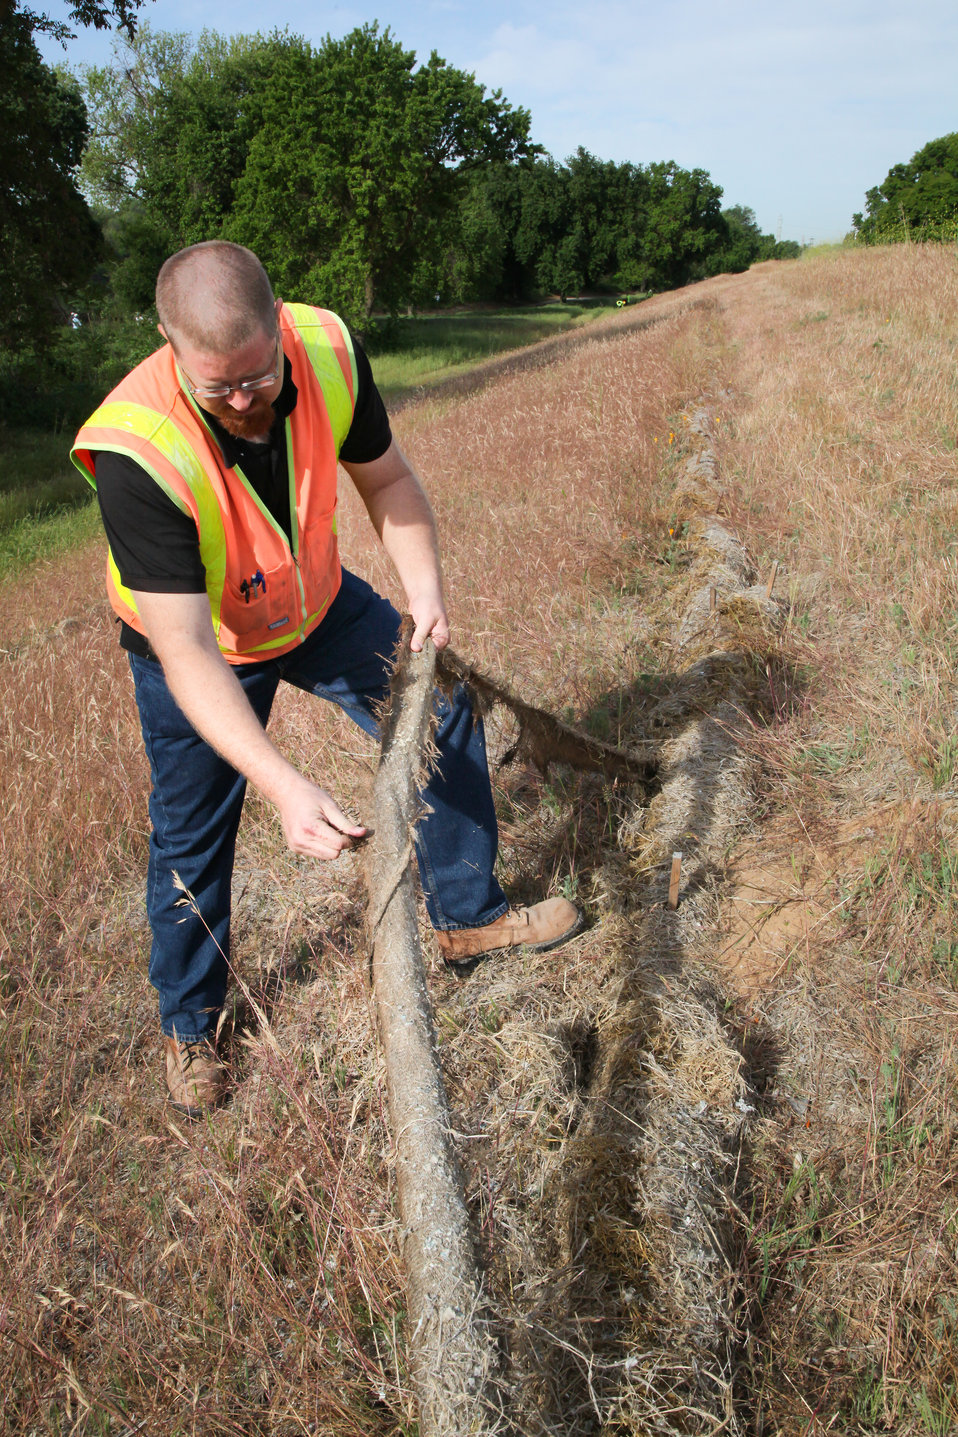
Ed Stewart inspects decomposed straw-netting

Ed Stewart, construction representative with the U.S. Army Corps of Engineers Sacramento District, inspects decomposed straw-netting prior to its removal April 19, 2013 along the American River in Sacramento, Calif. The rolls of straw, called wattles, were put in place to help native grasses take hold on the newly refurbished levee during the winter rains. Their removal is one of the final steps in restoring this reach to its pre-construction condition. More than 4,000 feet of this levee was reinforced and raised an average of one foot to safely pass more water coming from Folsom Damand its auxiliary spillway, currently under construction and slated for completion in October 2017.